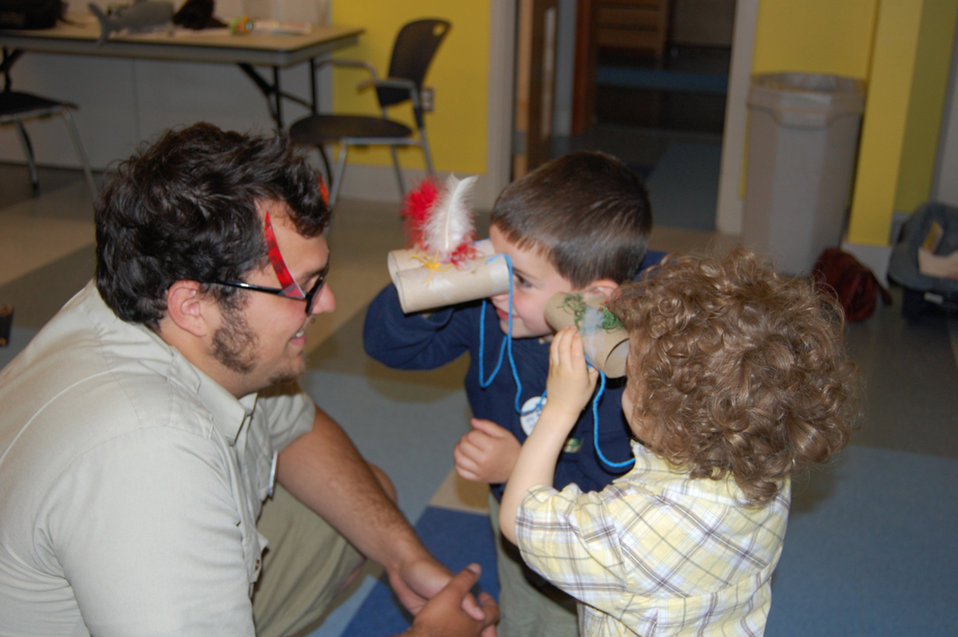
Sense of Wonder Camp

Sring 2009 session of the Sense of Wonder Camp, a camp for children ages 3-4 at Parker River National Wildlife Refuge.Credit: Kate Toniolo/USFWS